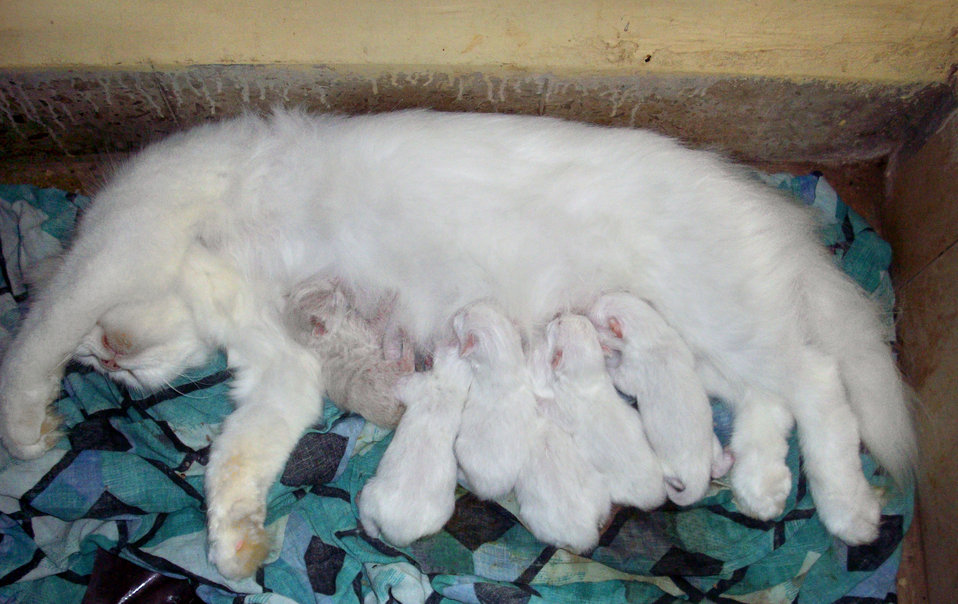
Doll faced Persian cat Matahari with her 6 kittens which are 2 days old. Most kittens of a large litter never survive in the wild, hence most feral cats average about 2 to 4 kittens/litter. “Persian” and other “Pedigreed Cats” have smaller litters barring the “Siameese” which has large litters upto 7 or 8. Mortality rate in large litters is high and on an average 2 or 3 survive to adulthood in “Pedigreed Cats” bred by breeders and “Pet Fanciers”. These kittens are just 2 days old.